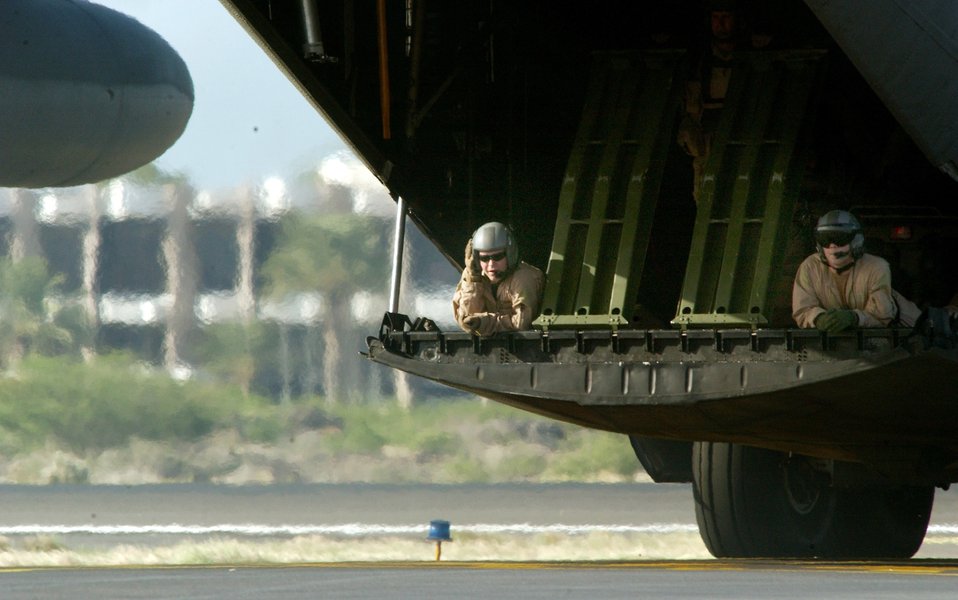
Patient rescue exercise

CAMP LEMONIER, DJIBOUTI, Africa (AFPN) -- Air Force C-130 Hercules loadmasters direct the aircraft to a secure location while Air Force pararescuemen perform a simulated patient rescue exercise here Feb. 12.